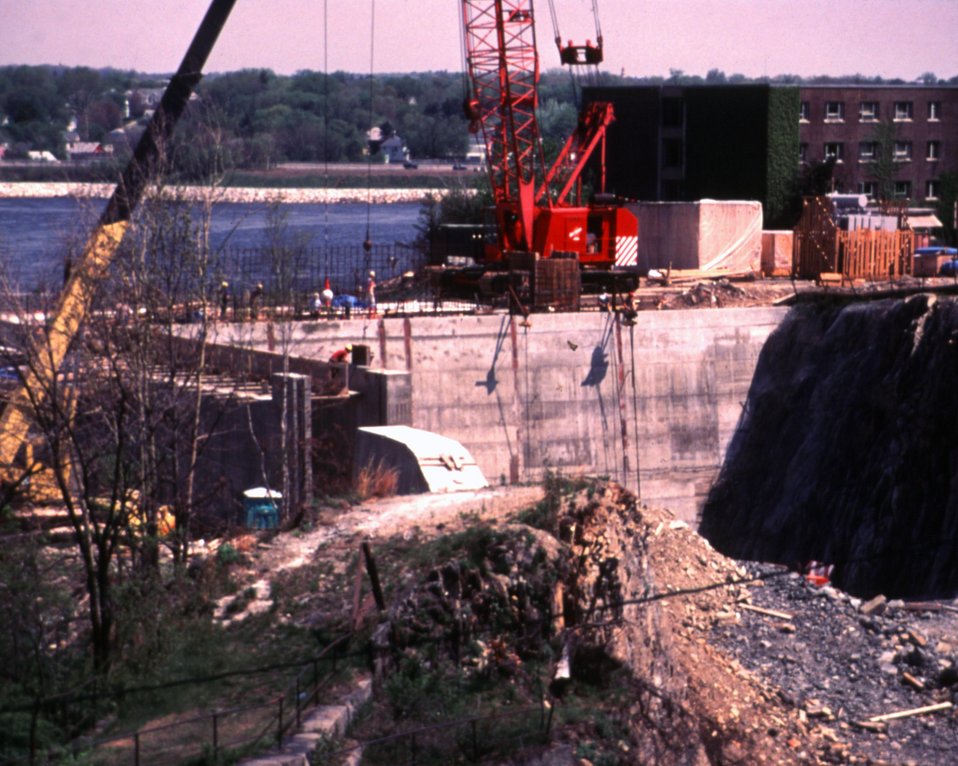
GENERAL VIEW OF POWERHOUSE CONSTRUCTION.

THE DOE SMALL-SCALE HYDROPOWER PROGRAM CONSISTS OF 19 PROJECTS AND DEMONSTRATES THE VIABILITY OF SMALL-SCALE HYDRO-POWER WITH AVAILABLE TECHNOLOGY. THE BOOT MILLS PROJECT, BEGUN IN OCTOBER, 1983, WENT ON LINE IN NOVEMBER, 1985. UTILIZING TWO KAPLAN TURBINES THAT PRODUCE A MAXIMUM OF 15,000 KILOWATTS, THE DAM PROVIDES A GROSS HEAD OF 35 FEET WITH AN ANNUAL STREAM FLOW OF 4,500 CFS.